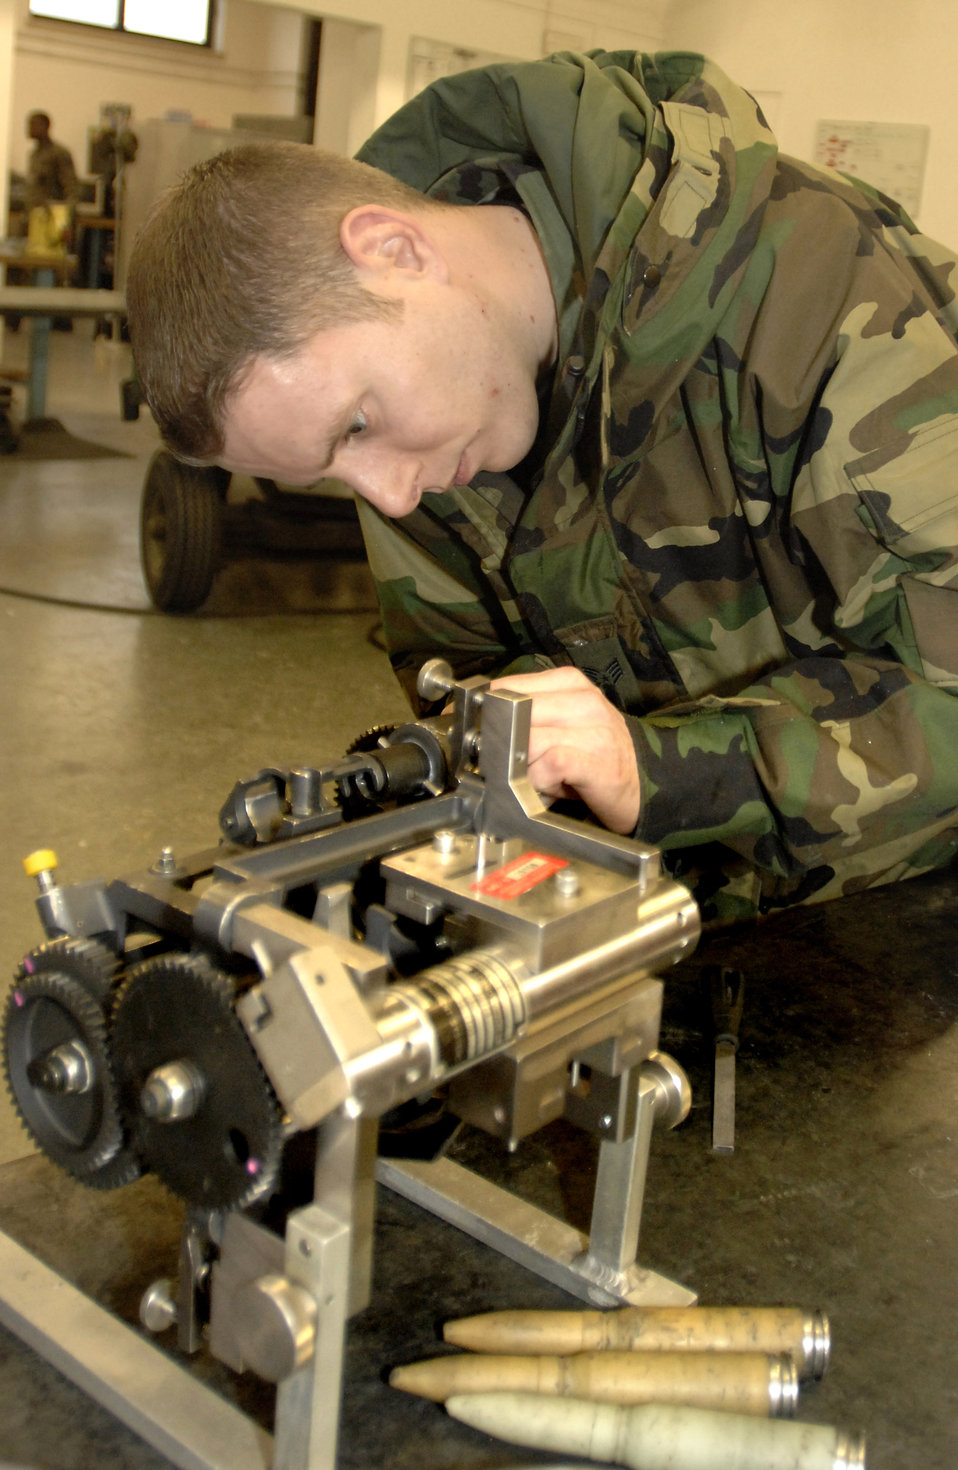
Attention to detail

Staff Sgt Tony Simper inspects the drum exit unit of an F-16 Fighting Falcon gun system Feb. 6 at Aviano AB, Italy. Sergeant Simper is an aircraft armament system craftsman with the 31st Maintenance Squadron Armament Flight. The flight is responsible for the maintenance of F-16 weapons systems.